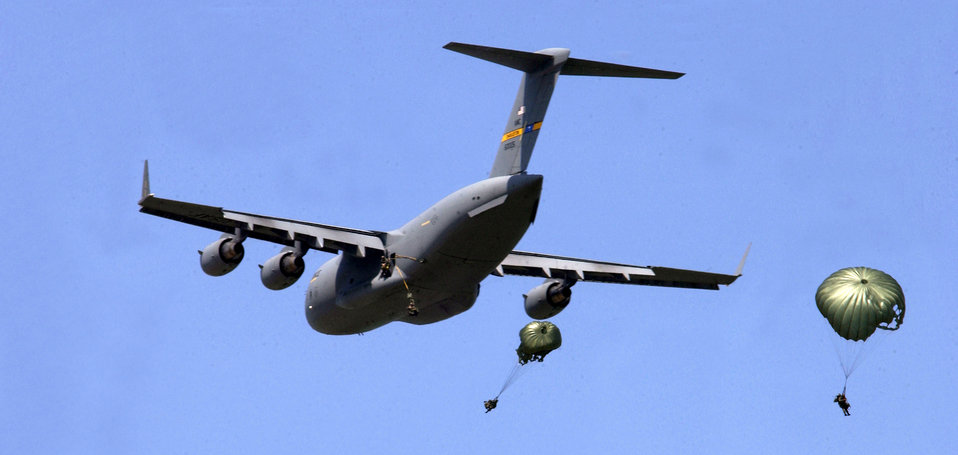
Everybody jump

LANGLEY AIR FORCE BASE, Va. -- Red Horse paratroopers jump out of a C-17 Globemaster III during the 2004 Airpower air show here May 22.